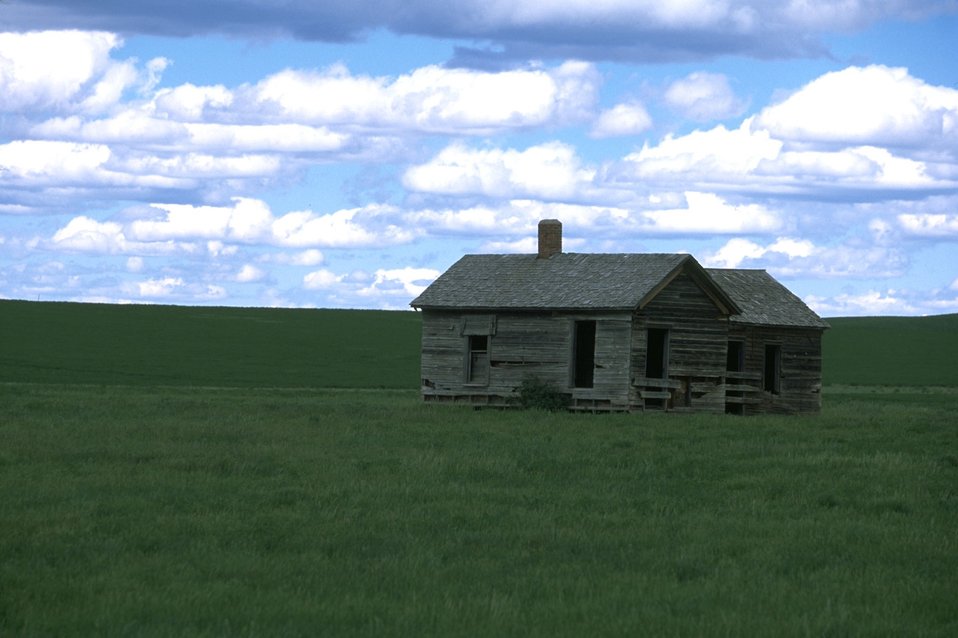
Remains of a homestead on the prairies of Montana